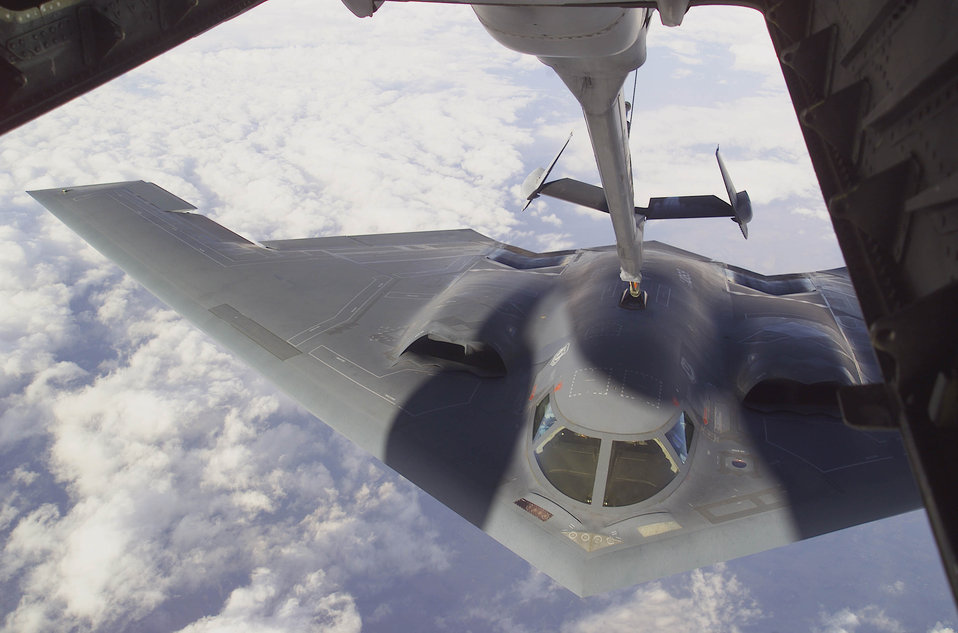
Capstone

FILE PHOTO -- The B-2 Spirit approaches the boom of a McGuire Air Force Base, New Jersey KC-10A Extender during a Capstone orientation flight. Capstone is a Joint Airborne/Air Transportability Training mission providing interservice training for the wartime application of airlift. Through Capstone, senior level officers are able to observe the significance of airlift and its role in all military operations.